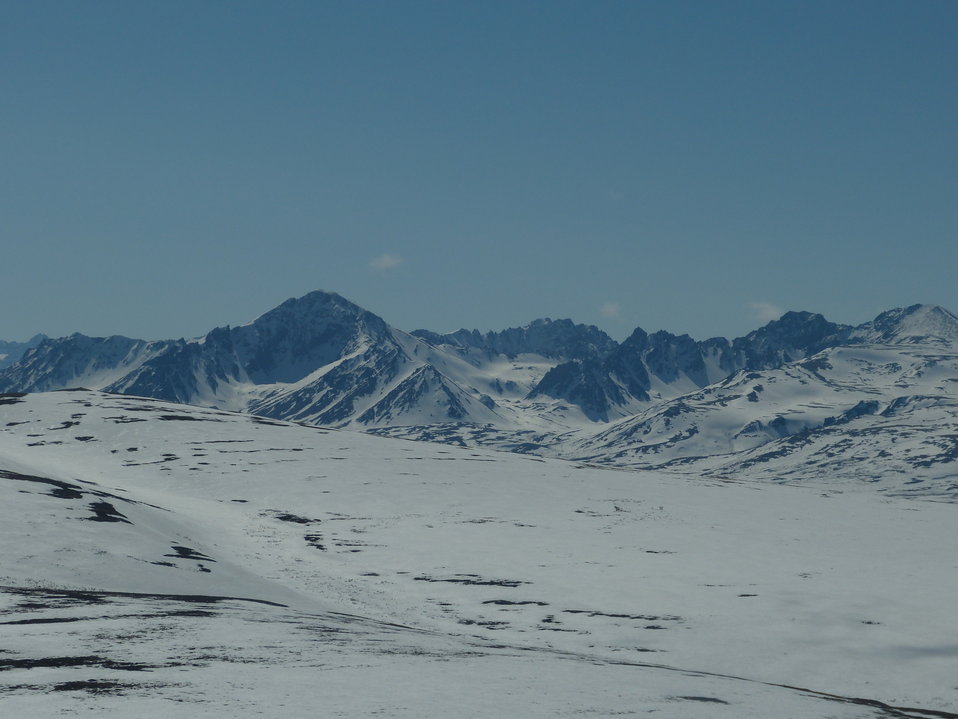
Kilbuck Mountains May2013 KSowl

Cliff-nesting raptor survey, Kilbuck Mountains, Yukon Delta National Wildlife Refuge

Photo credit: Kristine Sowl,
USFWS, YDNWR